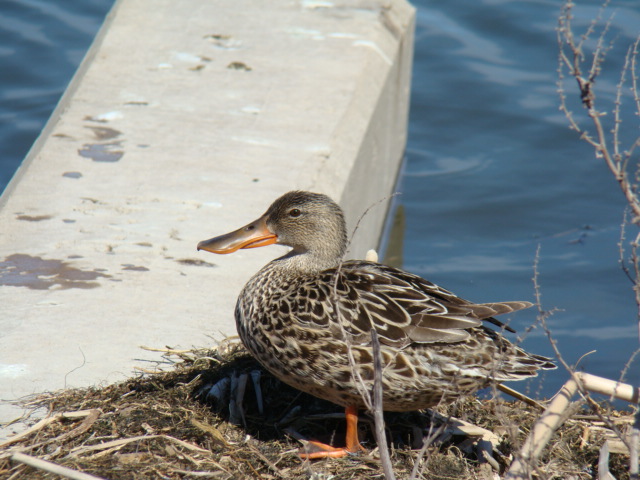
Northern Shoveler Hen

The lands of the refuge were established to protect and provide habitat for migratory birds that cross State lines and international borders and are by law a Federal trust responsibility.
The refuge is of great value to waterfowl and shorebirds, as well as other migrating water-dependent bird species, because of the diversity of wetland and upland habitats that provide for the diverse life cycle needs of these species.